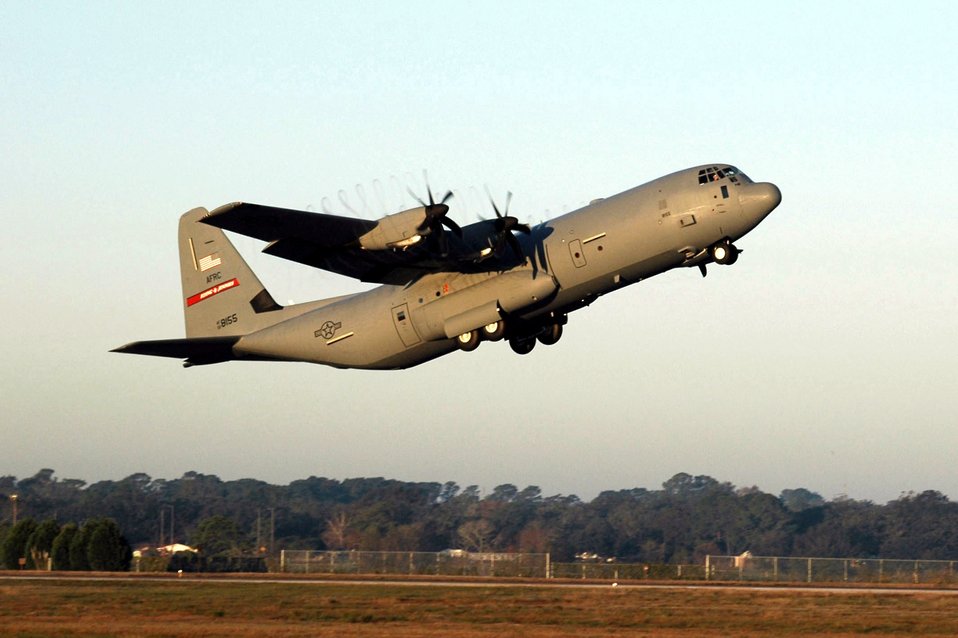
AMC declares IOC for C-130J

A C-130J Hercules takes off with an aircrew from the 815th Airlift Squadron and support members from the 403rd Wing at Keesler Air Force Base, Miss. The C-130J has been declared by Air Mobility Command officials to be Initial Operational Capability ready.